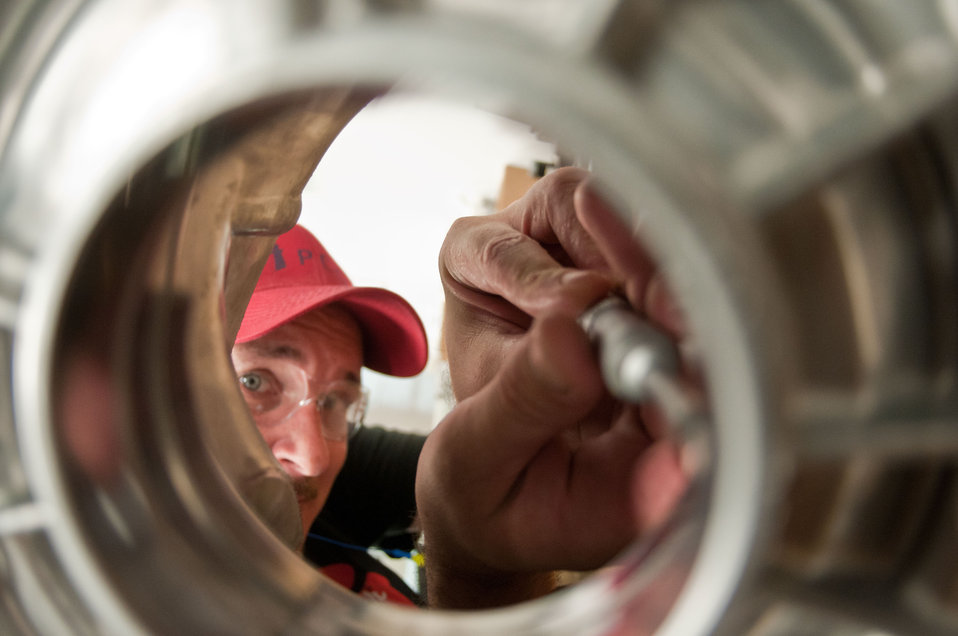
Quality Control Specialist Tim Russell uses a specialized micrometer to measure of machining performed at Port City Group’s Port City Castings Corporation manufactures high-pressure aluminum die-castings, mostly for the automotive industry, in Muskegon, MI, facility on Wednesday July 20, 2011. Port City Group boosted its employment by 12 percent over last year thanks to two Rural Business Guaranteed Loans totaling $9.6 million. In its 80,000 sq. ft. facility, machines that range from 800 – 1,600 tons, and cast A380 aluminum alloy products from melted ingots of aluminum, into automotive components of U.S.A. made vehicles. The process features a variety of robotic presses; computer controlled machining; quality control facility; and complete measurement and testing laboratory. In 2009 banks were backing out of loans for PCG equipment purchase agreements. The U.S. Department of Agriculture (USDA) loan guarantee helped make the loan possible with its guarantee. PCG obtained the needed robotic and other equipment. This resulted in a stable workforce that has since grown. When asked about their USDA experience, Port City Group Sales Manager Laura LaGuire said, “It was great! They were very helpful. Everything that came up was handled smoothly, the money came in place when it was needed, and it was a very smooth transition.”